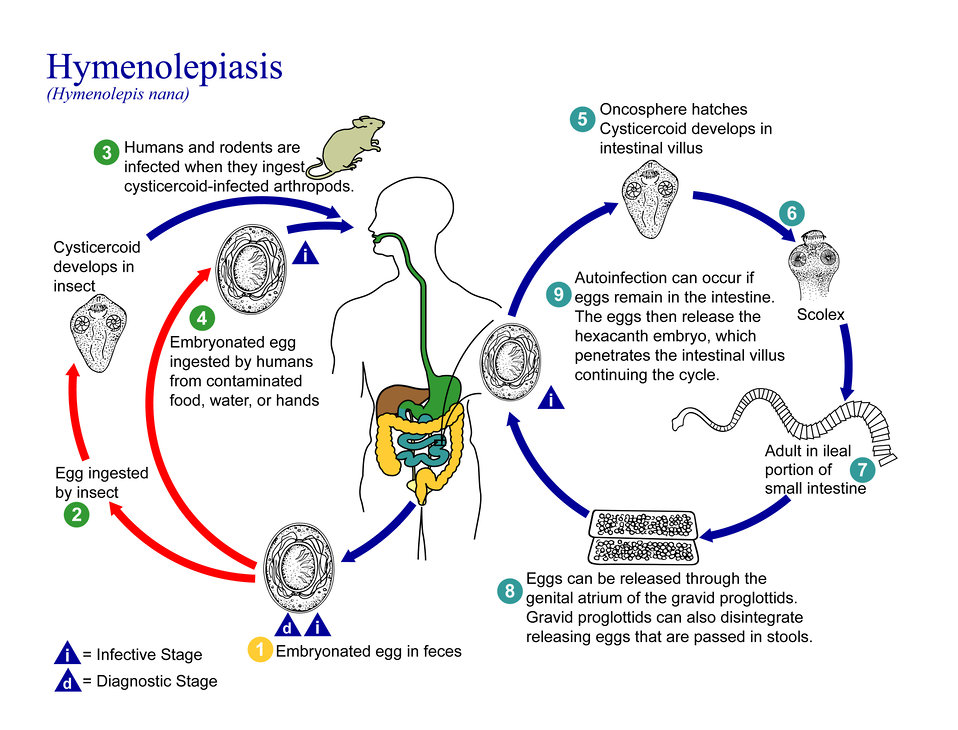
This is an illustration of the life cycle of Hymenolepis nana, the causal agent of Hymenolepiasis.